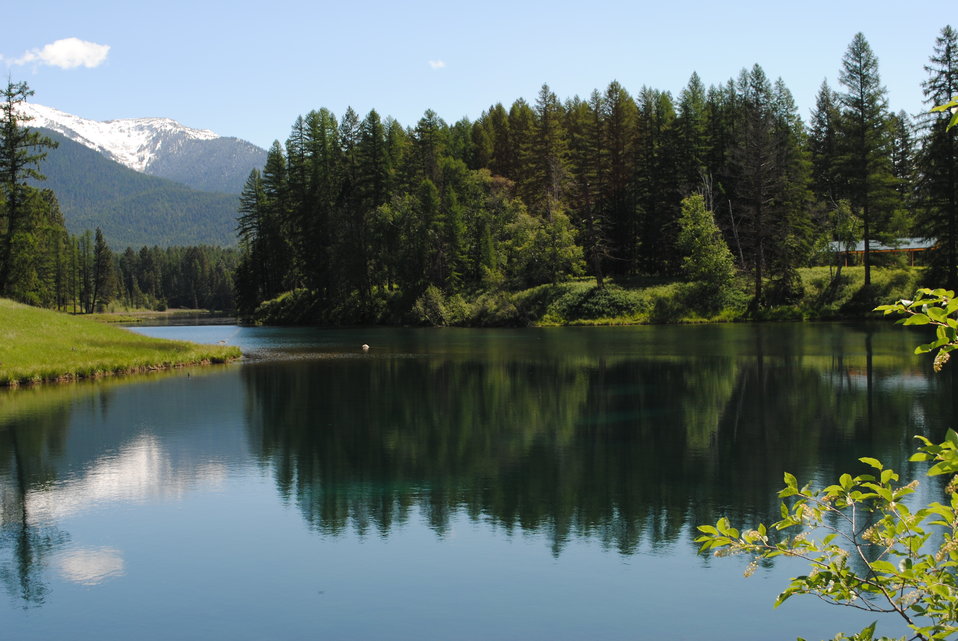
13th Place - Creston's View of Jessup Mill Pond

Summertime is a great time to visit the Creston National Fish Hatchery. As you walk the grounds, don't forget to take the time to take a photo or two...

Location: Creston National Fish Hatchery

Credit: Evie Bradley / USFWS

Photo Contest Entry #106